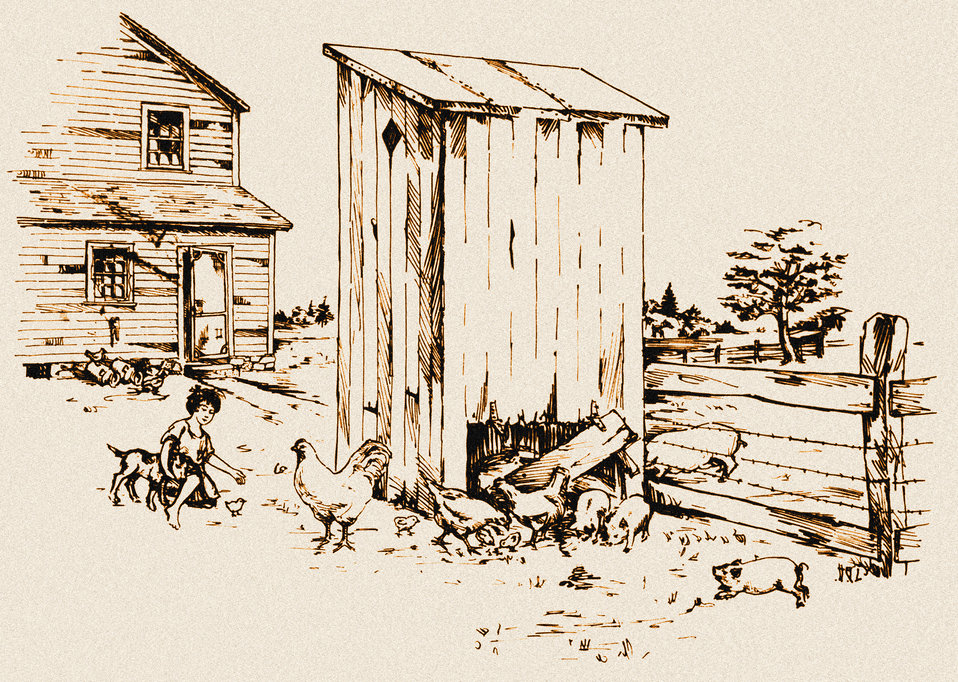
This historic diagram, which had been digitally enhanced and colorized, depicted an example of the unsanitary placement of a farm house privy from which animals were able to convey infection to human beings. Note that the back of structure was in need of repair, thereby, allowing farm animals to access contaminated areas inoculating themselves with infectious agents found in the waste. Note also the proximity of the animals to the farm family's living spaces, and the child whose barefoot state increased her susceptibility to diseases such as hookworm, as well as what might be contracted from the animals.